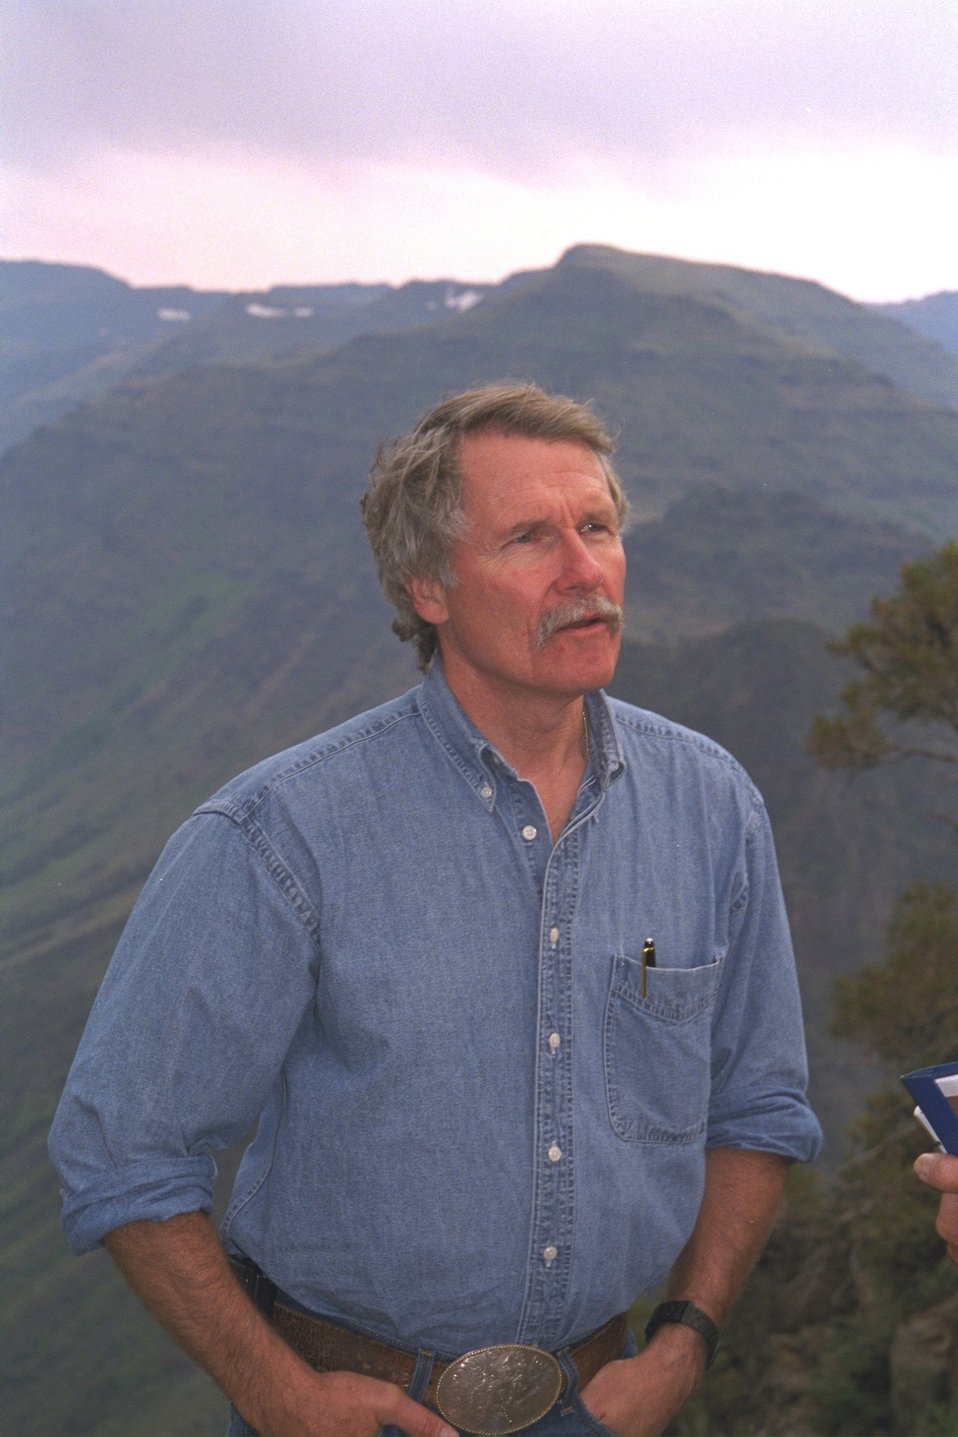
Governor Kitzhaber at Big Indian Gorge overlook.